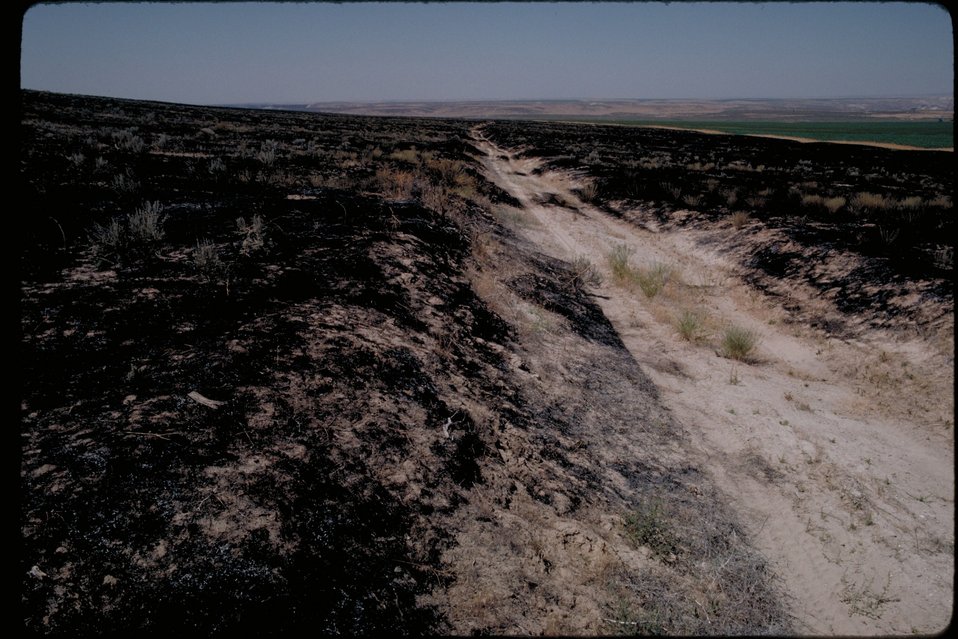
Oregon Trail Flink Mesa Fire Cassia Gulch Cultural resource Historic area LSRD Lower Snake River District